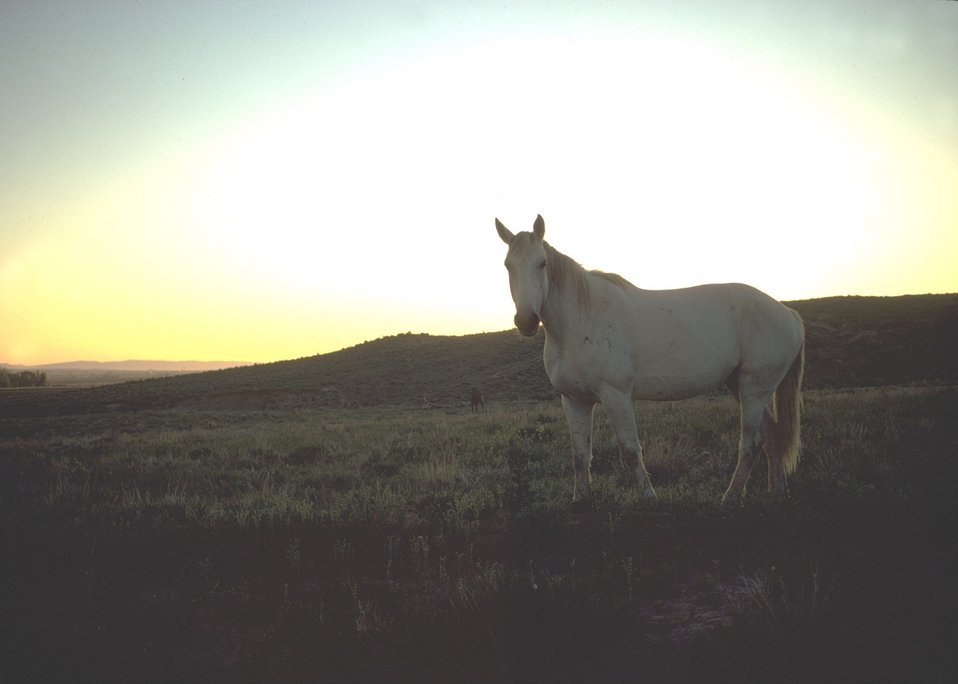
Wild horses.